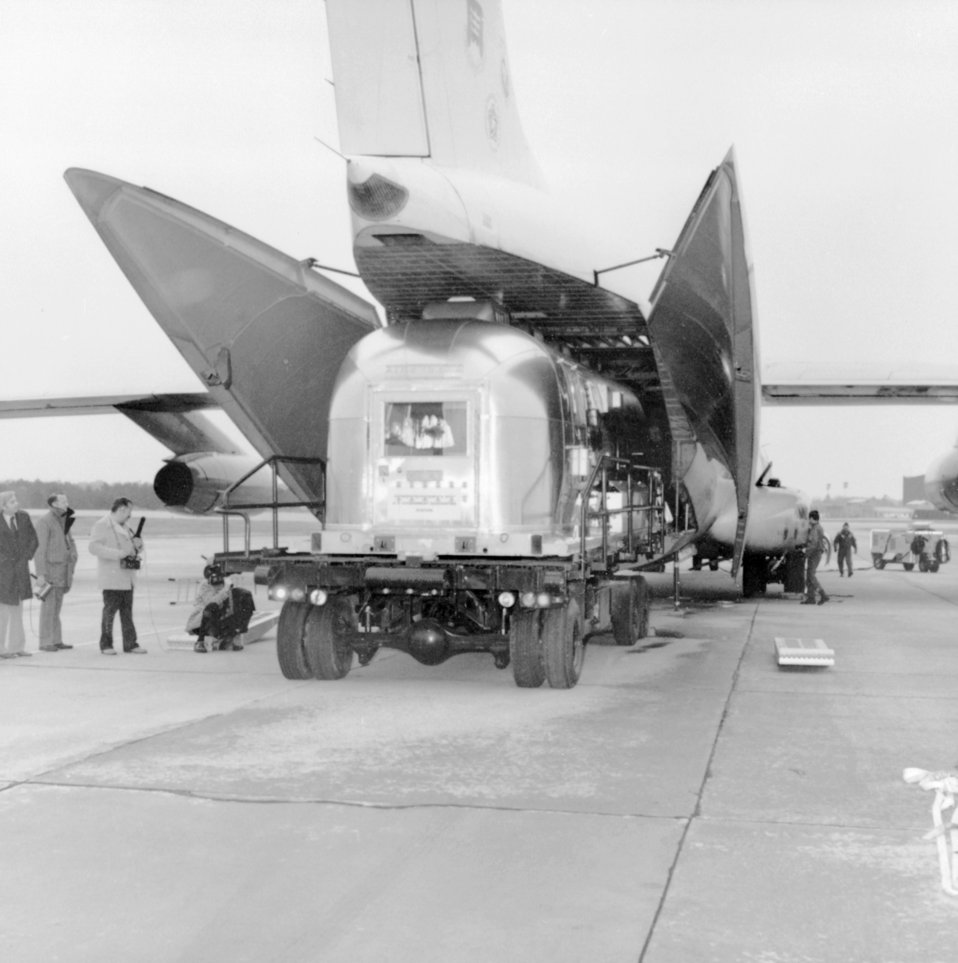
This photograph was taken as the Lunar Receiving Station was being unloaded at Dobbins Air Force Base, GA in 1976.